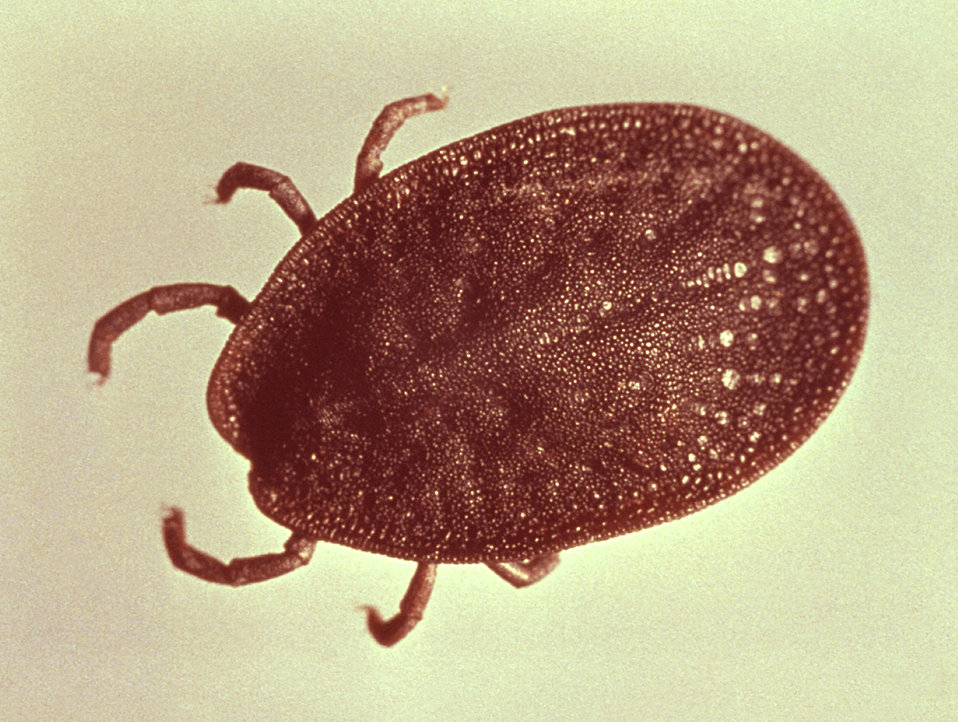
This is a member of the Argasidae family of North American 'soft ticks', and is a member of the genus Argus.